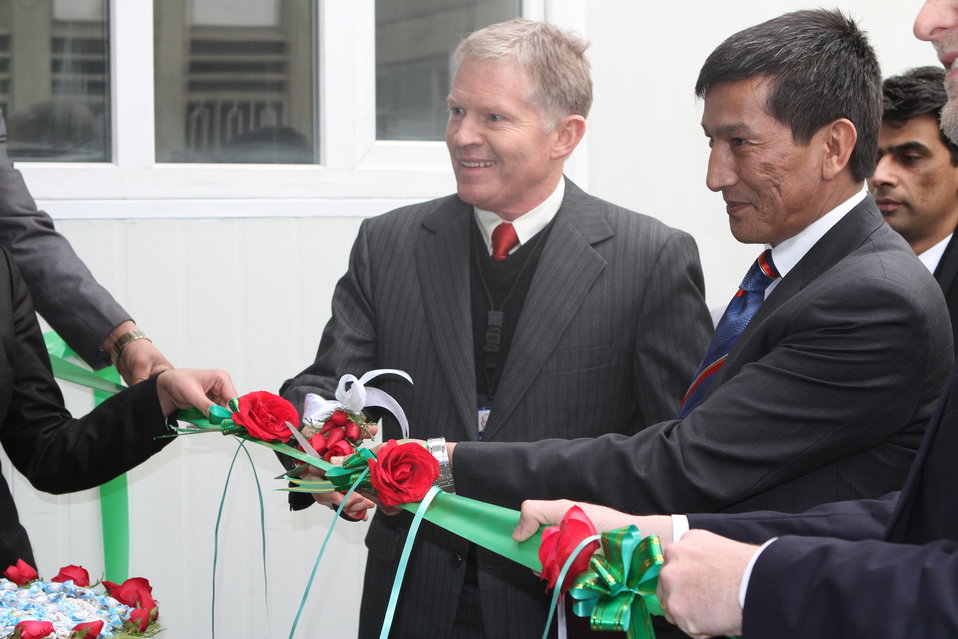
Ribbon cutting FAIR

USAID Deputy Mission Director Jed Barton, Institute of Diplomacy Director Hazrat Wahriz, and US Embassy Deputy Political Counselor Geoff Odlum open the MFA Training Center with a ribbon cutting.